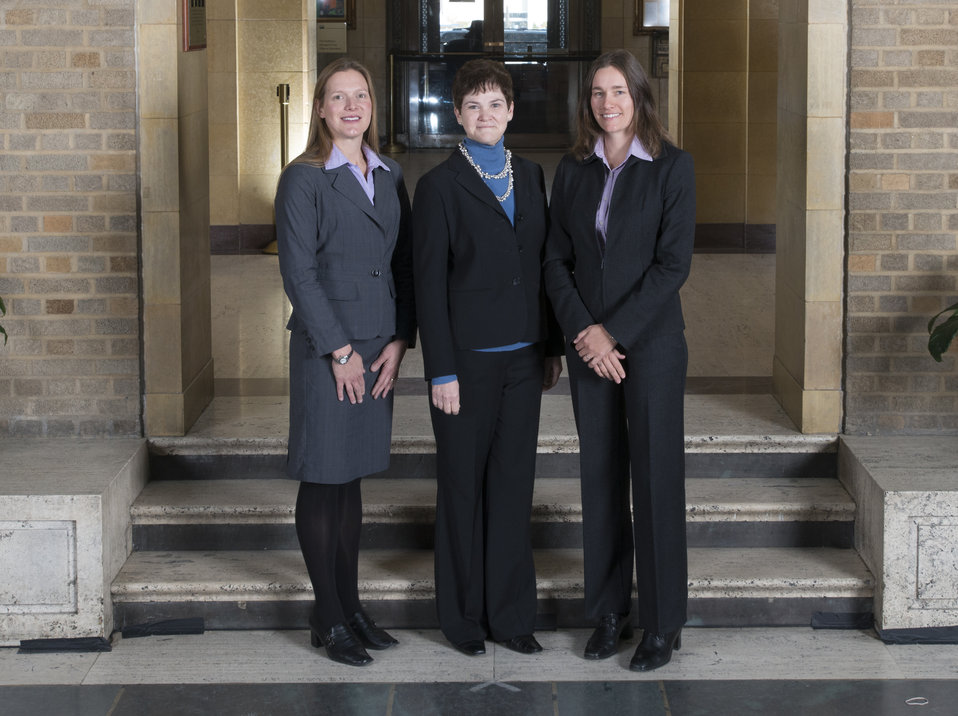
Agriculture Deputy Secretary Krysta Harden stands with the Mono Basin National Scenic Area Visitor Center PV (Photovoltaic) System Team, Forest Service from Bishop, CA on the patio at the U.S. Department of Agriculture (USDA) in Washington, D.C. on Wednesday, Dec. 11, 2013. The team received the Secretary’s Honor Award for joint efforts in the field of sustainable operations, resulting in carbon footprint reduction at Department facilities and increasing sustainability awareness among National forest visitors.